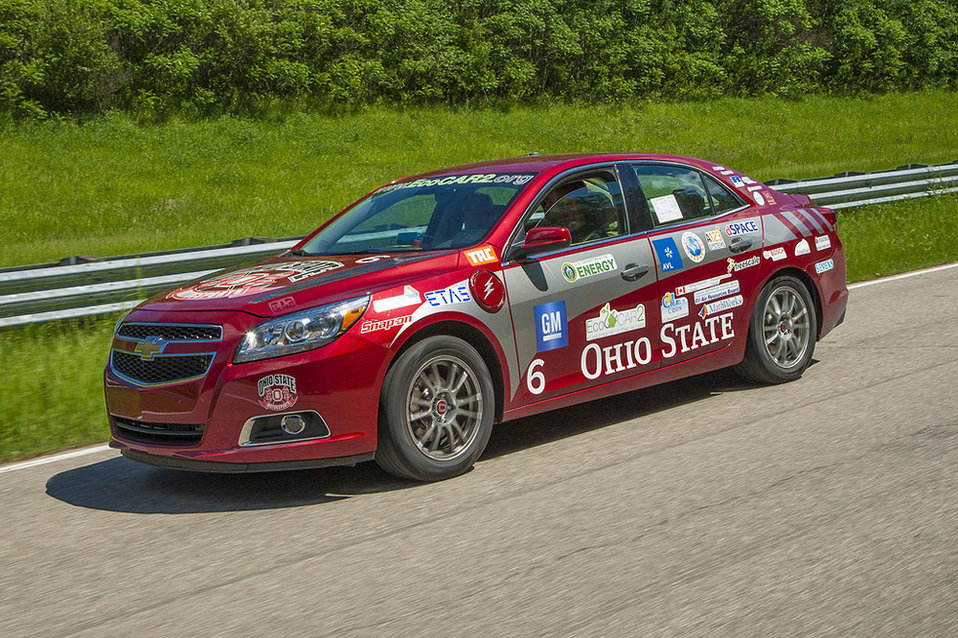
Ohio State University’s vehicle came out on top after taking the lead in multiple categories, including best pre-competition safety and technical inspection, lowest criteria emissions and best communications plan. | Photo courtesy of EcoCAR 2.